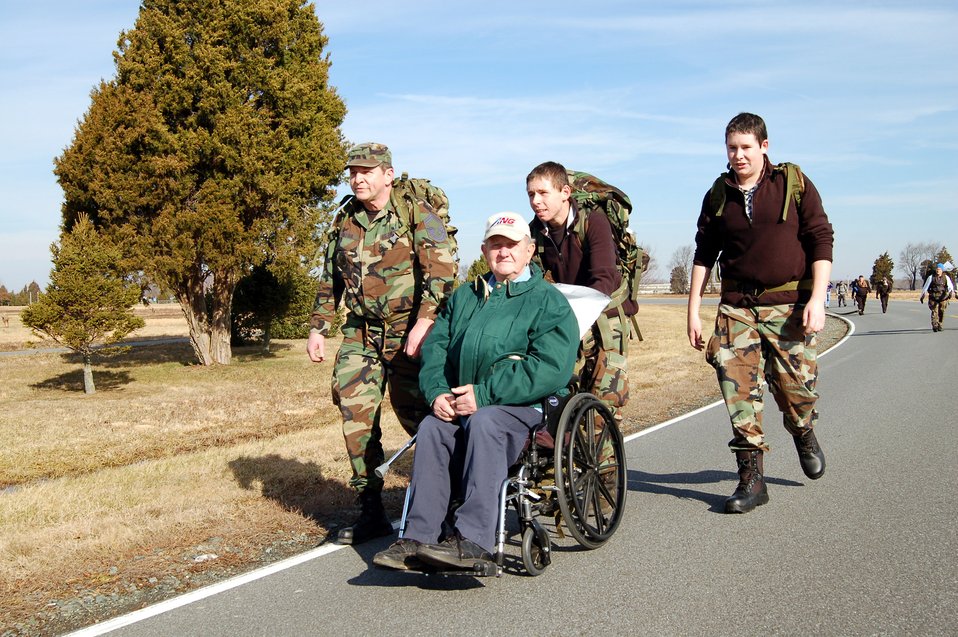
Remembering the chosin

Senior Master Sgt. James Yetter, retired Army Cpl. Charles Yetter, and Luke and Alex Yetter, commemorate the Korean War at the 9th Annual Ruck March held at the Air Mobility Command Museum Feb. 2 at Dover Air Force Base, Del.